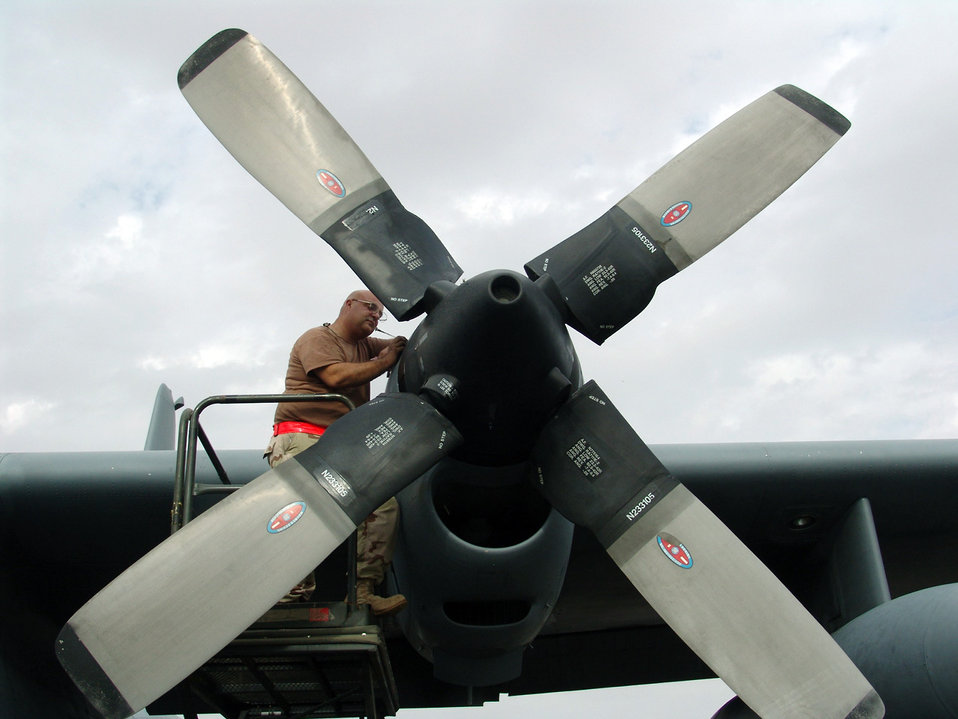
Under the hood

SOUTHWEST ASIA (AFPN) -- Staff Sgt. Marco DaSilva checks the oil in a C-130 Hercules engine at a forward-deployed location. He is assigned to the 386th Expeditionary Maintenance Squadron. Sergeant DaSilva is deployed supporting Operation Iraqi Freedom from the 440th Airlift Wing at Milwaukee, Wis.